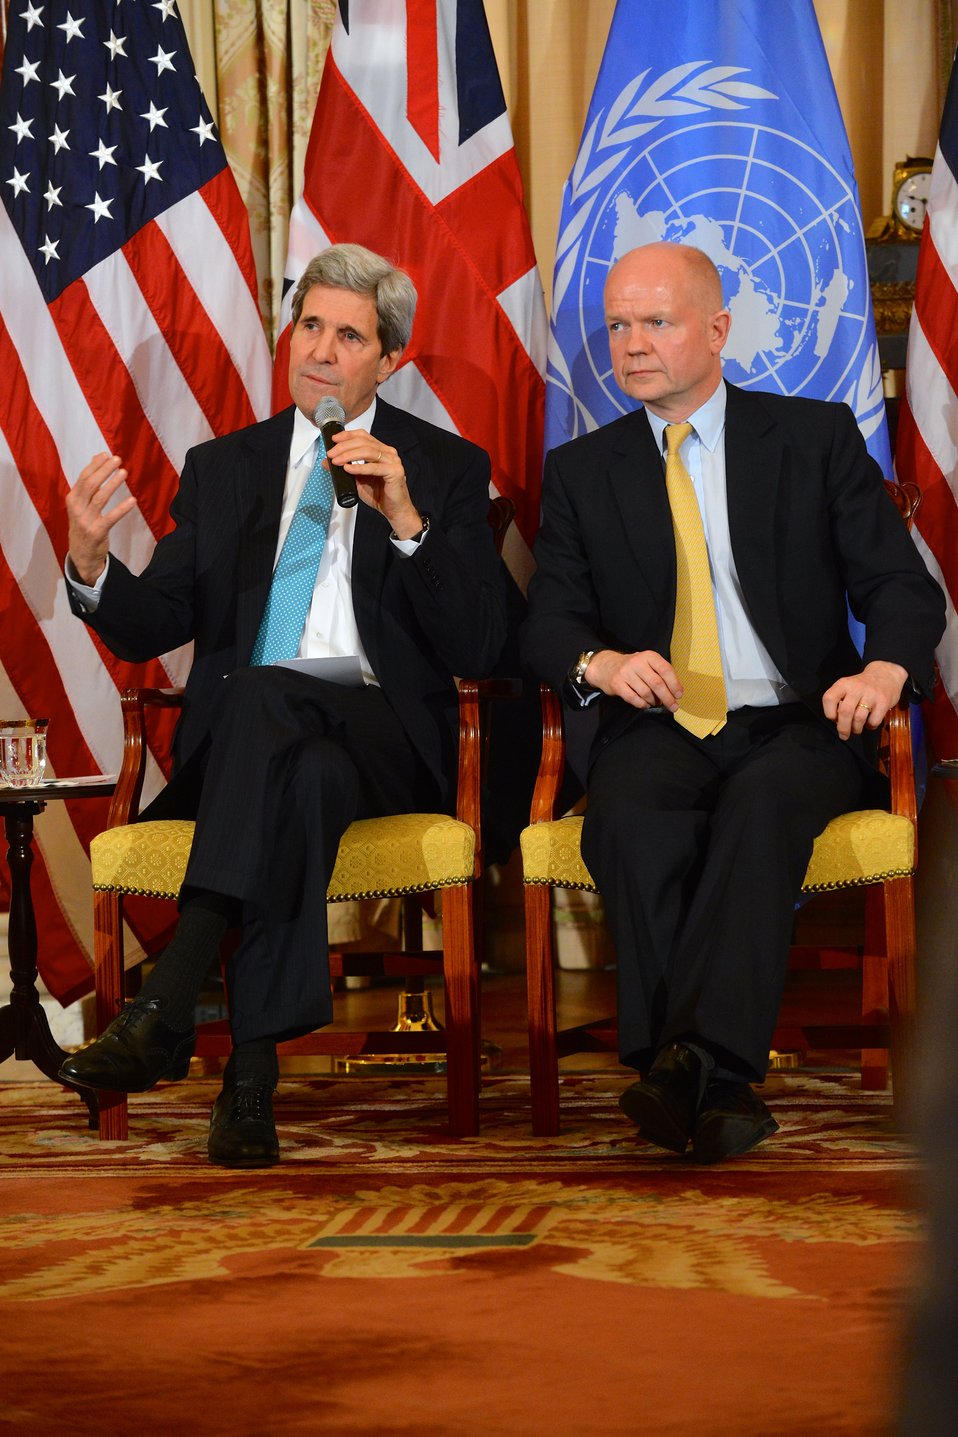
Secretary Kerry and U.K. Foreign Secretary Hague Participate in a Panel on Efforts To Prevent and Respond to Sexual Violence in Conflict

U.S. Secretary of State John Kerry and U.K. Secretary of State for Foreign and Commonwealth Affairs William Hague host a panel on ending and preventing sexual violence in conflict situations at the U.S. Department of State in Washington, D.C., on February 25, 2014.